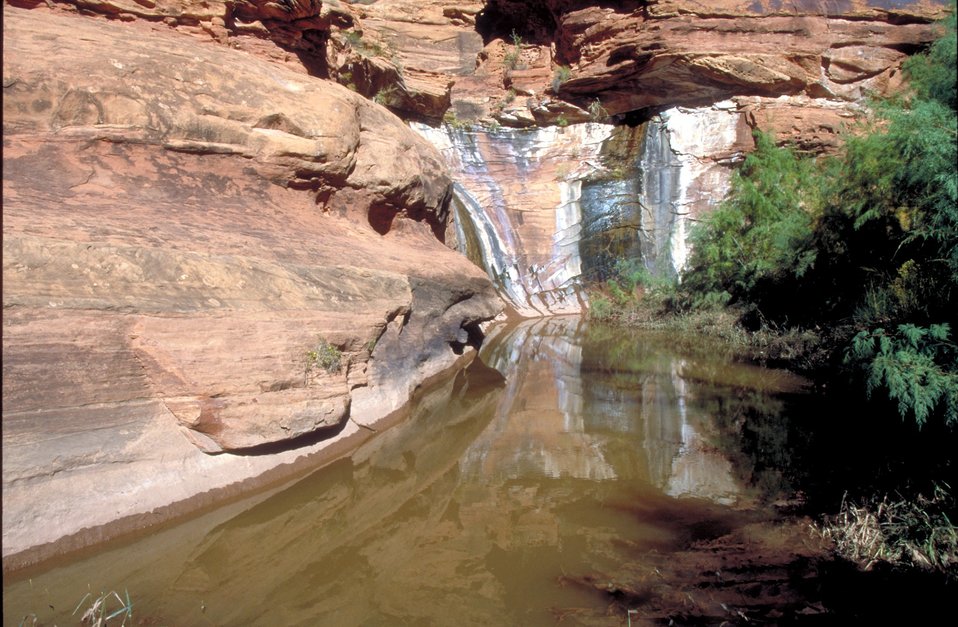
Stream in Hunter Canyon near Moab, Utah.